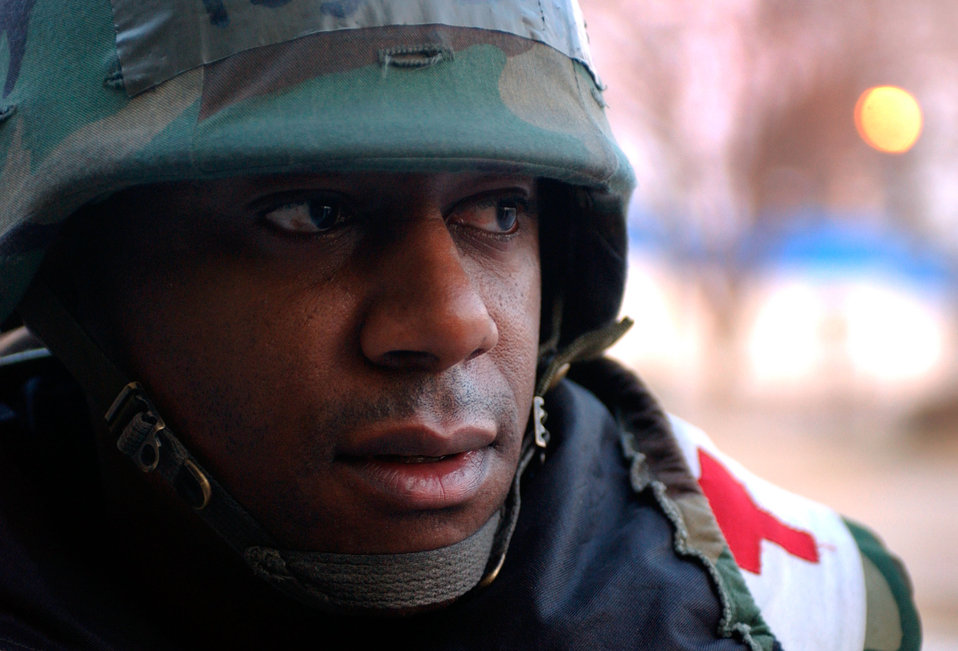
Waiting for help

OSAN AIR BASE, South Korea -- Tech. Sgt. Curtis Ellis of the 51st Medical Group waits for the fire department during a mass casualty exercise at here on March 20, 2002.